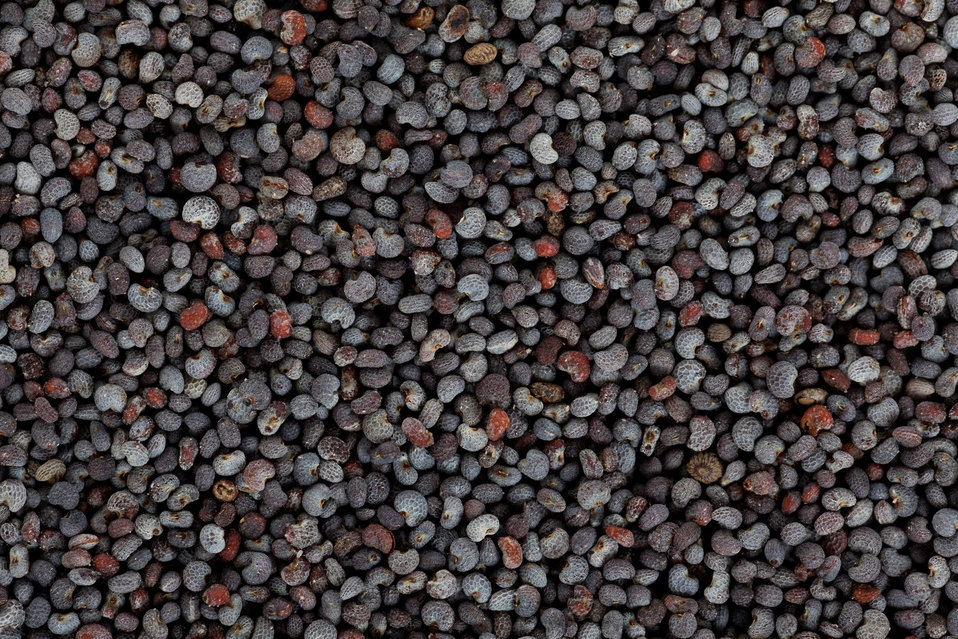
Poppy seeds texture macro background image.